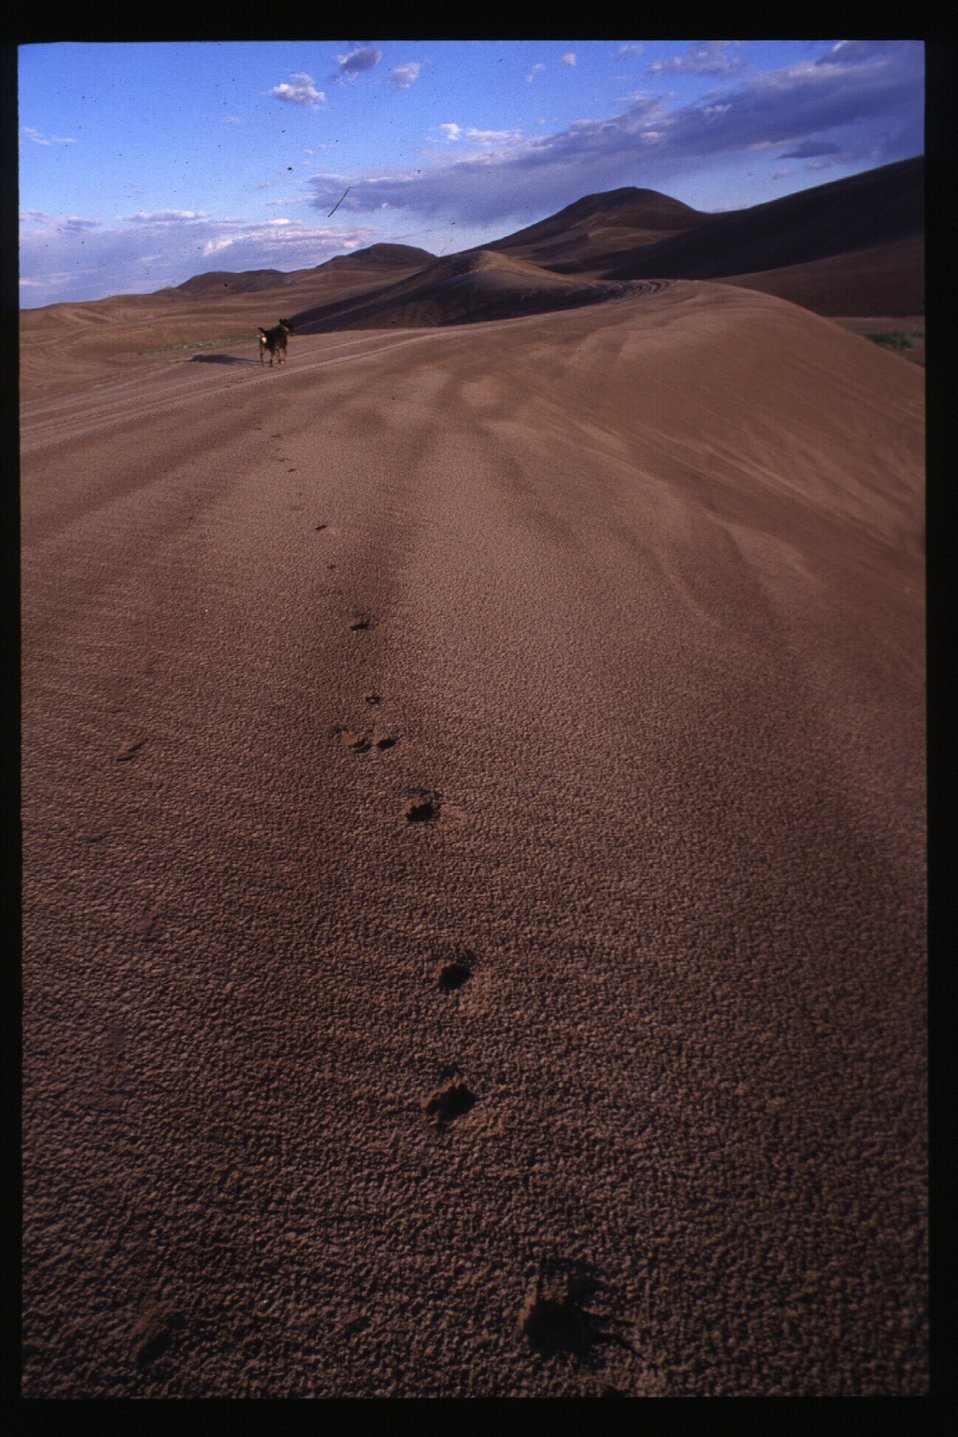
Recreation St Anthony Sand Dunes Overview Idaho Falls Field Office USRD Upper Snake River District